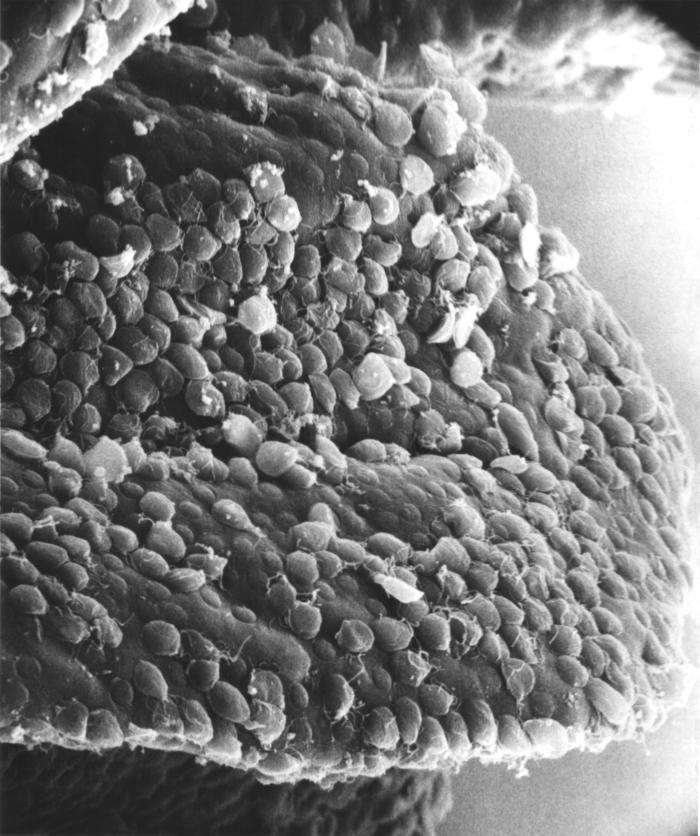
This scanning electron micrograph (SEM), which focused on the apical third of a rat intestinal villus, revealed that is was heavily infestated with Giardia muris. In this particular image, Giardia trophozoites almost completely covered the entire villus. Dome-shaped areas between the trophozoites are circular lesions on the microvillous border produced by attachment of the parasites' ventral adhesive disk (suction cup) to the intestinal mucosal surface.